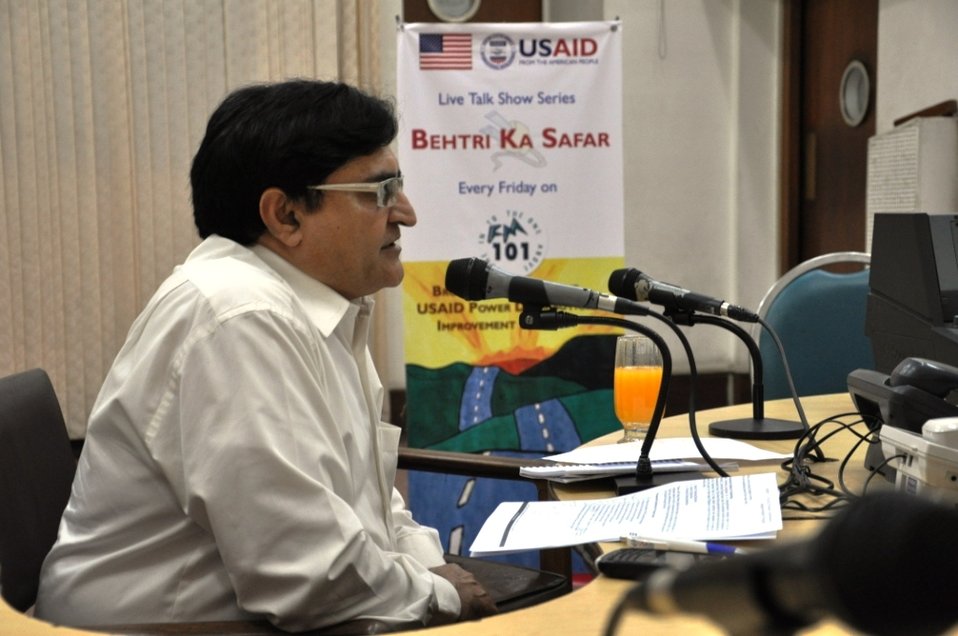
Behtari Ka Safar - Episode 4 - linemen safety training program.

Dr. Tehseen Chohan elaborated PDPs Quick Impact Safety Training Program for DISCO linemen in episode 06 of Behtari Ka Safar. He stressed the importance and need of the initiative which was highlighted by the interview of the linemen staff in the later part of the episode who had been handicapped while performing their duties at the distribution lines.